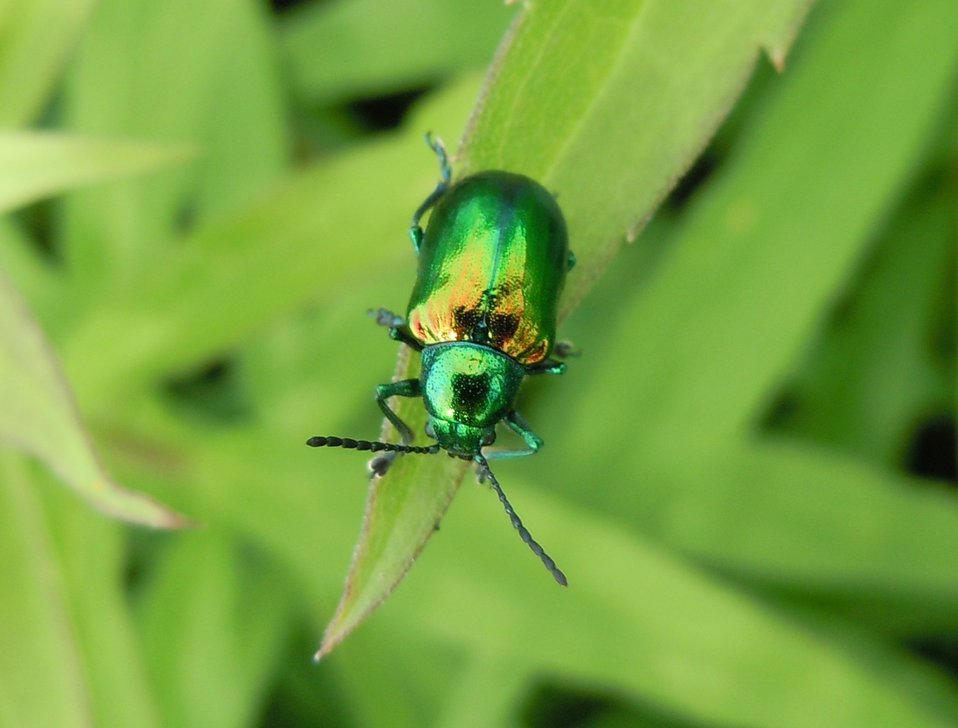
dogbane beetle

Port Louisa National Wildlife Refuge, IA